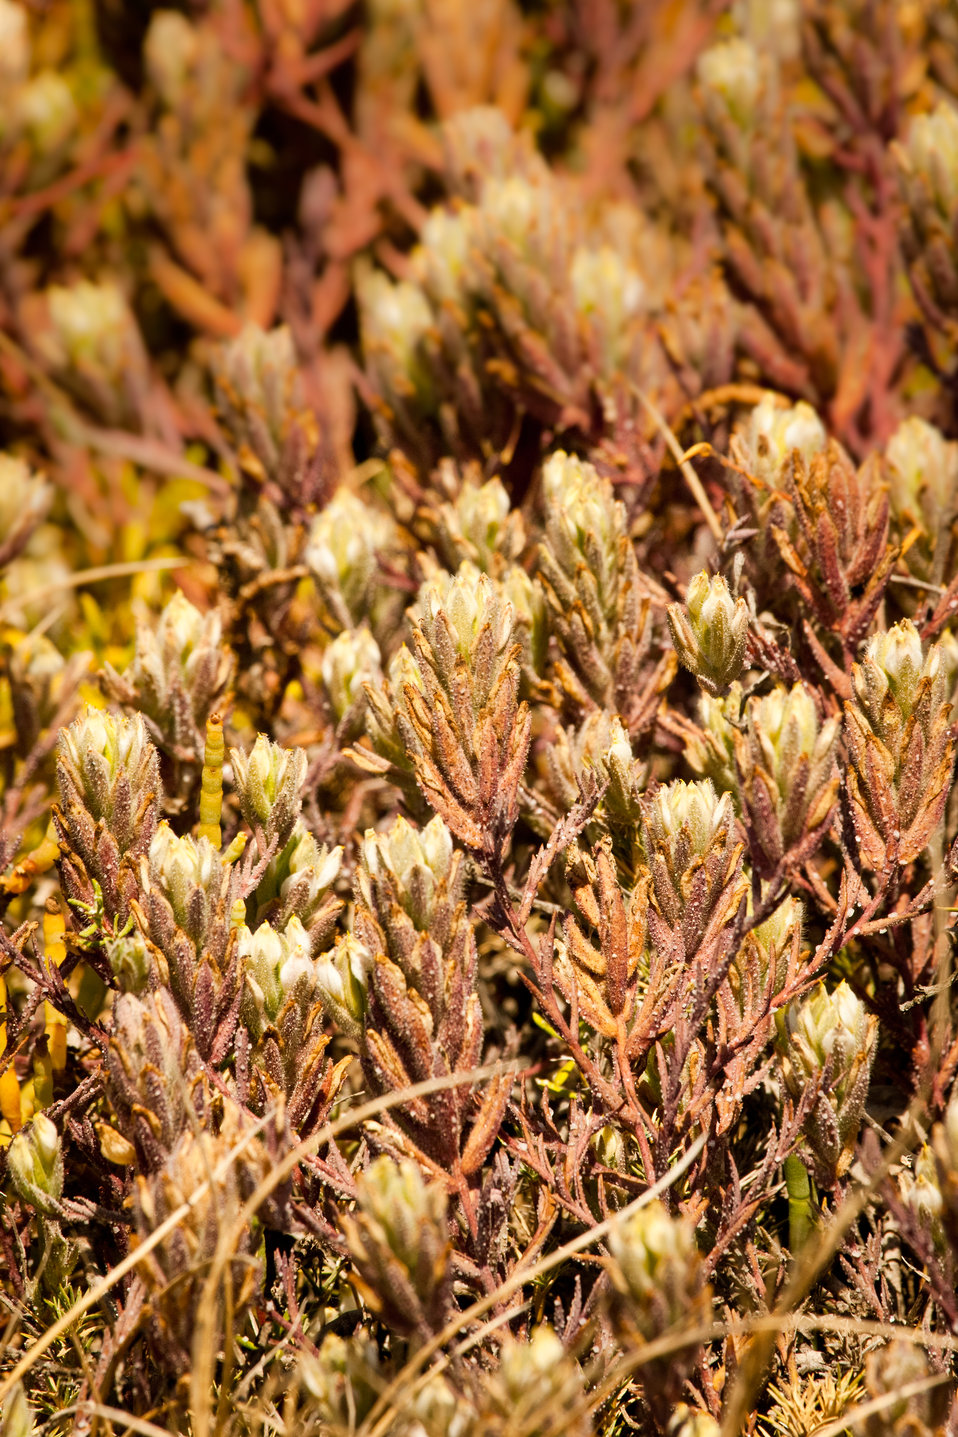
Salt marsh birds beak (Cordylanthus maritimus maritimus)